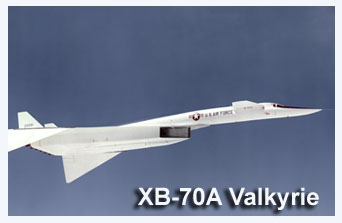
B-70A Valkyrie

The B-70A Valkyrie is a huge delta-wing, strategic bomber that could fly up to three times the speed of sound and at altitudes above 70,000 feet. Advances in enemy surface-face-to-air-missile technology prevented its production beyond the prototype stage. The manufacturer was North American Aviation.